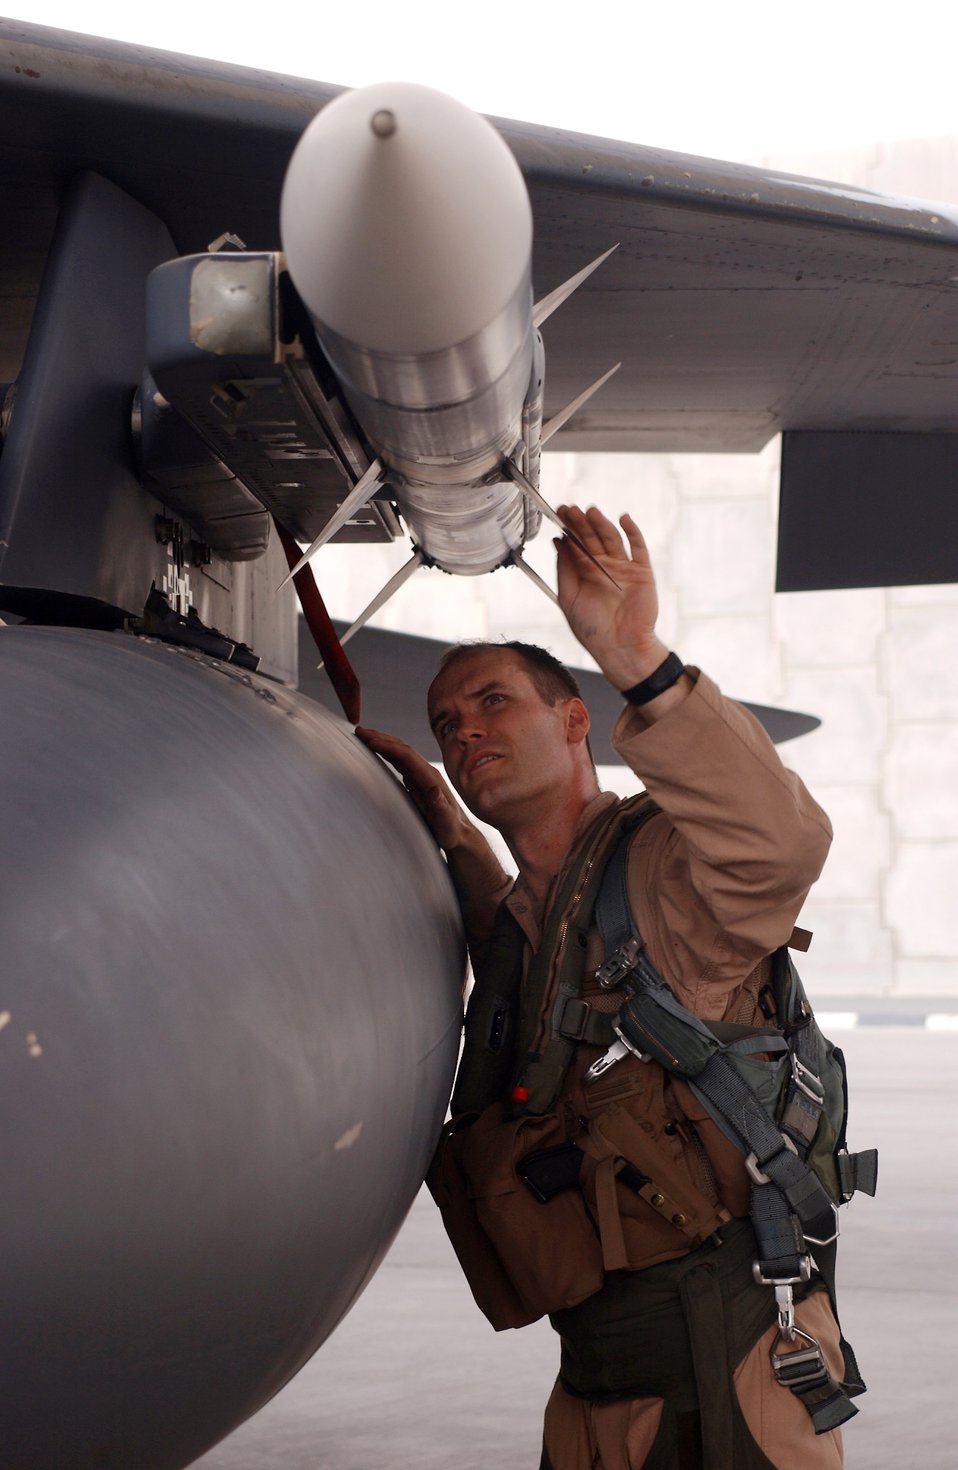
Combat mission

Maj. Jeff O'Donnell checks an AIM-120 air-to-air missile during the pre-flight inspection of his F-15E Strike Eagle before a combat mission from a forward operating base in Southwest Asia Aug. 18. Major O'Donnell is a pilot deployed to the 335th Expeditionary Fighter Squadron from Seymour Johnson Air Force Base, N.C.